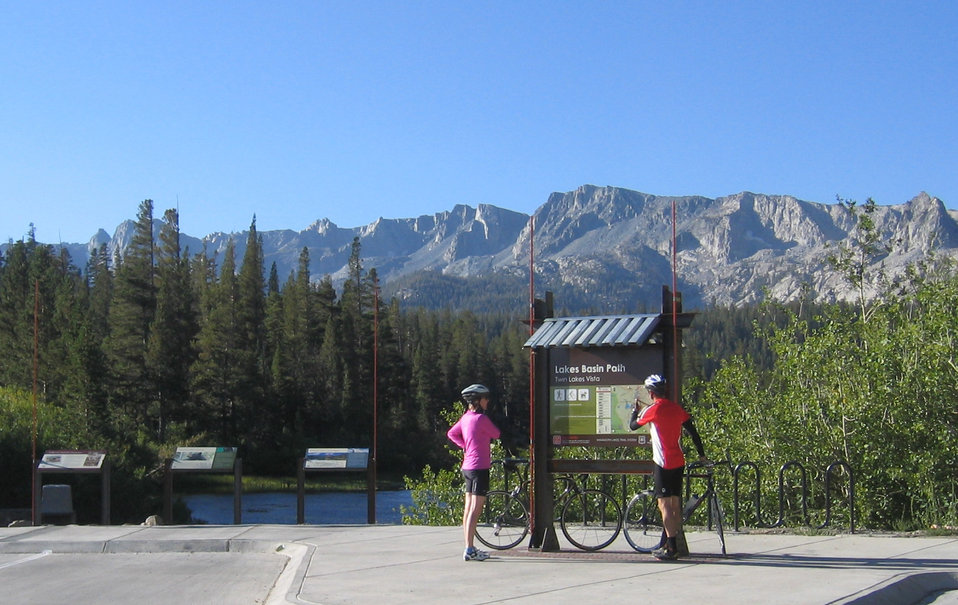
Lakes Basin Path Sign Interpretative Panels

The signs’ locations and placements are being jointly managed by Inyo National Forest, California and Town Public Works Department personnel through a Challenge Cost Share Agreement.